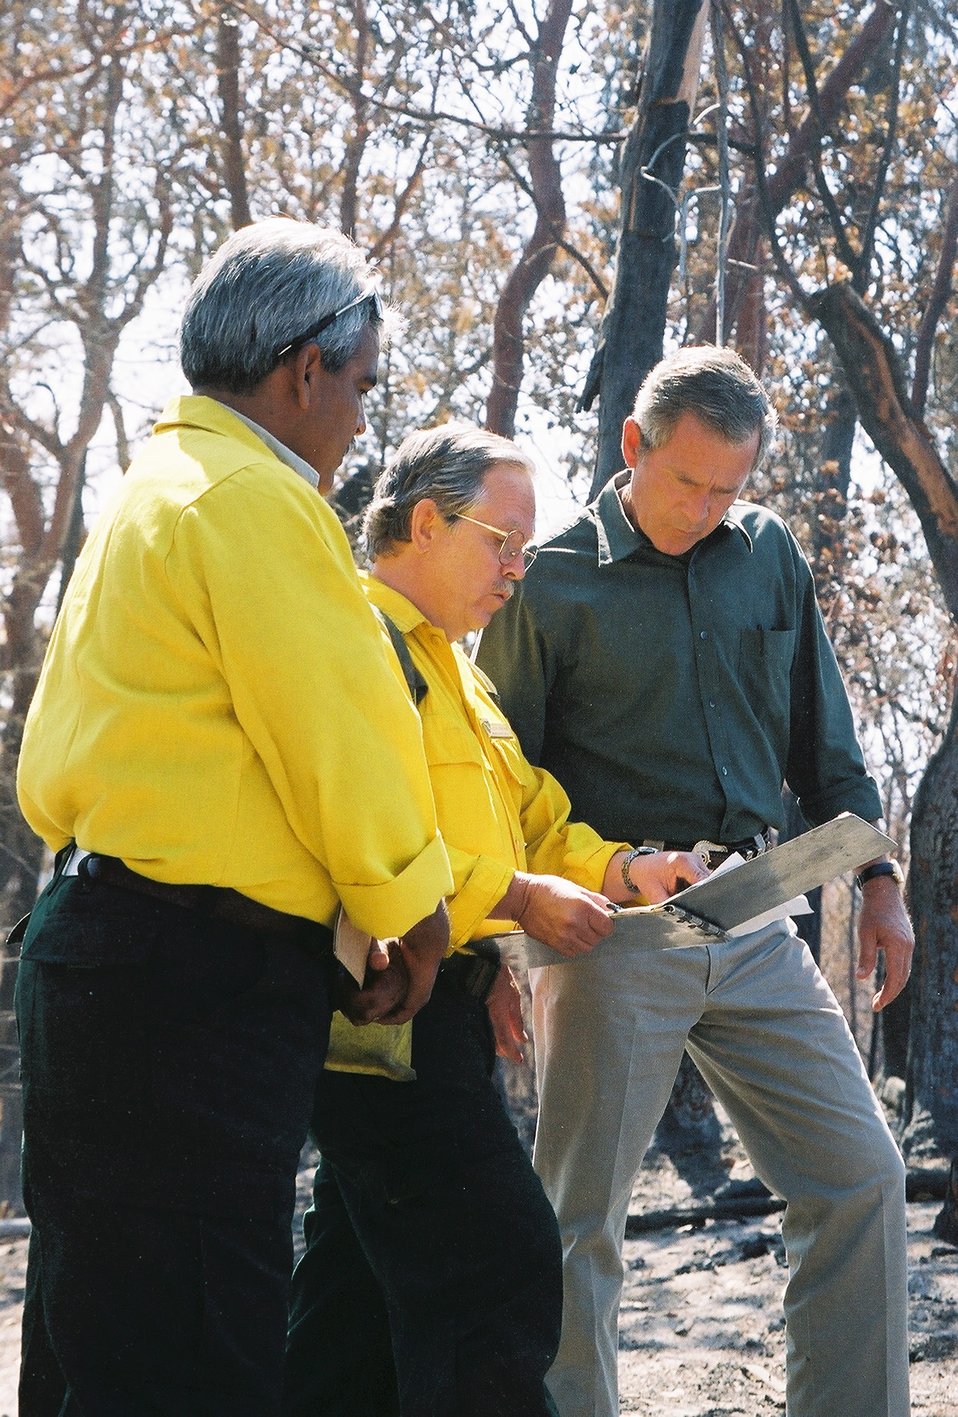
President Bush is briefed by Luis Ramirez and Steve Armitage of the BLM Medford District on how fuel hazard treatments reduced the damage to the landscape at the Squires fire. August 22, 2002.